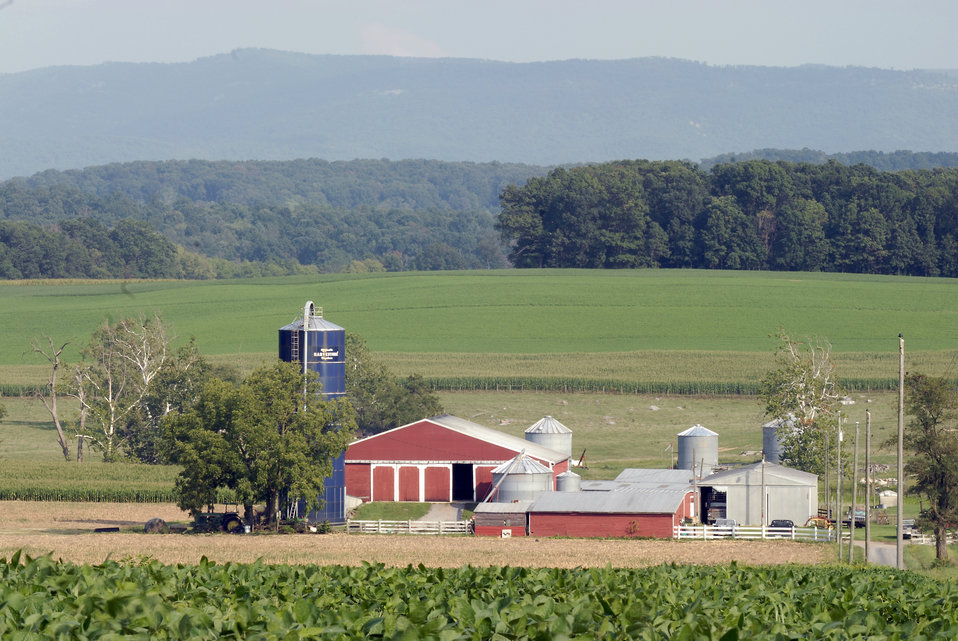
Fall is harvesting time on a farm in Augusta County, Virginia on September 9, 2008.